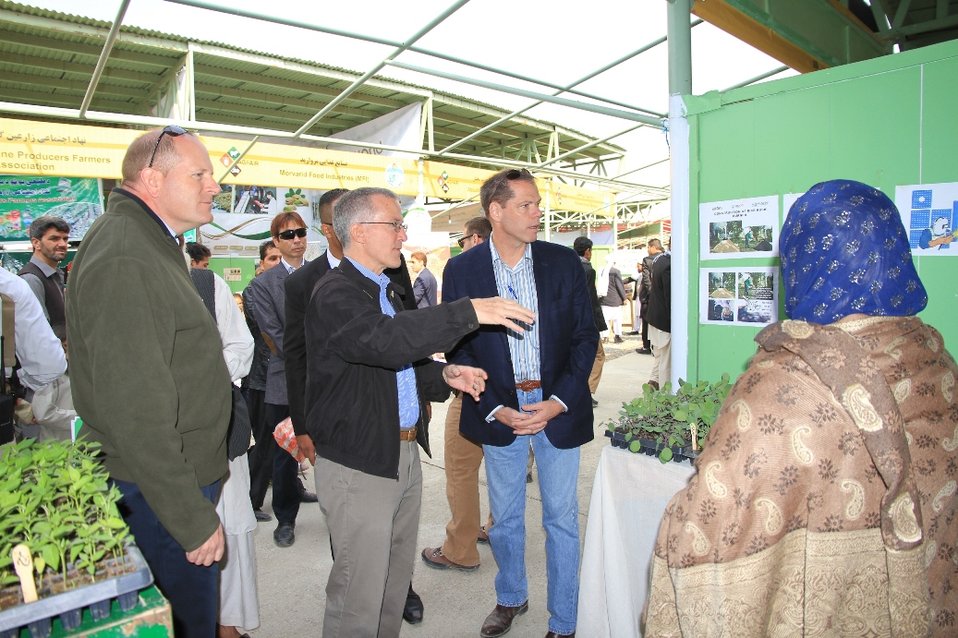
Ag.Fair, October 2013

Mina Tahiri (R), an IDEA-NEW employee, and USAID officials William Hammink (C), Larry Sampler (center-right) and Steve Orr (L) discuss products displayed by the Lachapur Plugh Seedling Production Green House during a visit to Kabul agricultural goods fair.